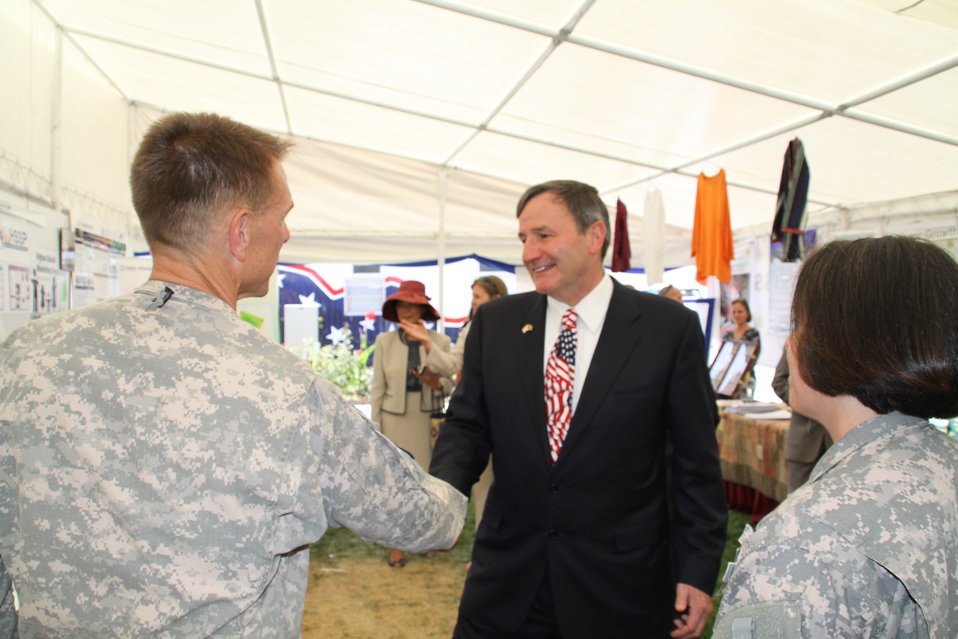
Kabul Official July 4th Celebration